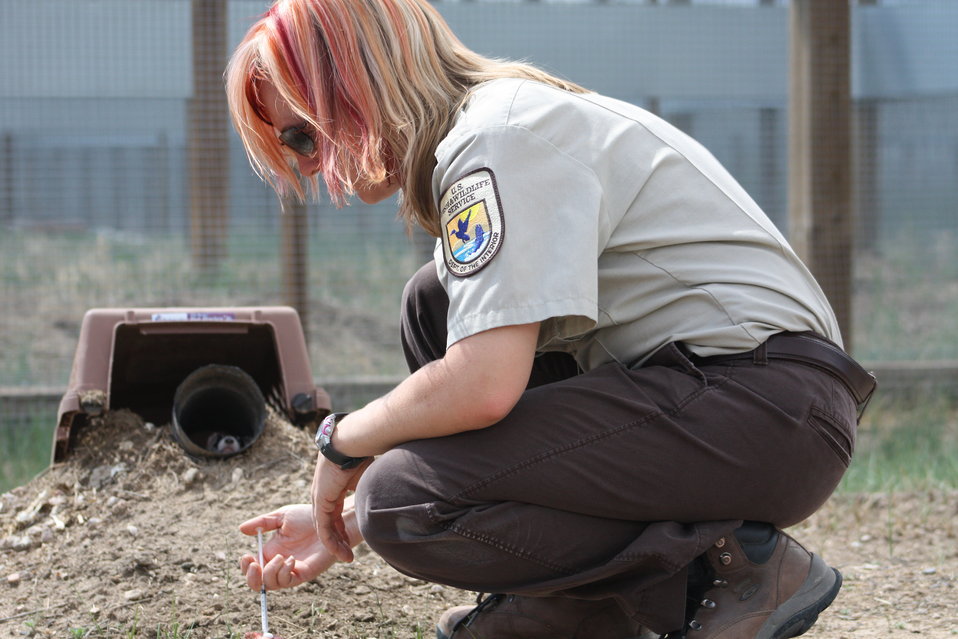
Interns visit the NBFFCC

In the summer of 2012, USFWS Region 6 interns visited the National Black-footed Ferret Conservation Center (NBFFCC) in Colorado to learn how the program reintroduces the endangered Black-footed ferret back into its native habitat.

In this photo, Robyn Bortner (NBFFCC Biologist) feeds the ferrets in their outdoor preconditioning pens!